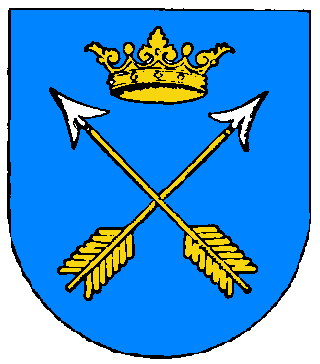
Dalarna coat of arms